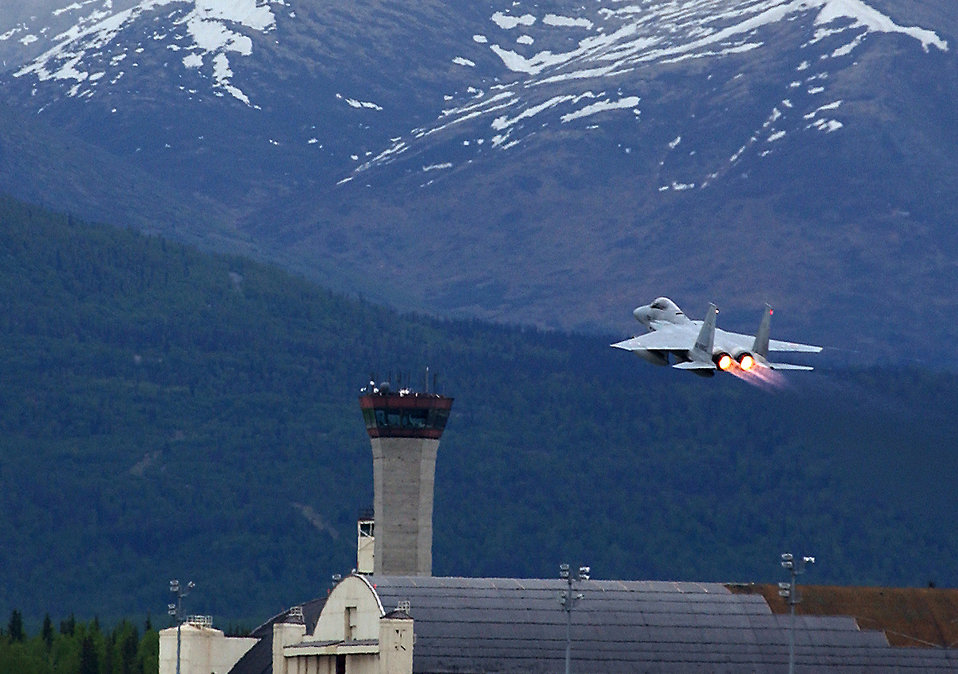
Afterburner on

ELMENDORF AIR FORCE BASE, Alaska -- A Japanese air self-defense force F-15J takes off for a familiarization training mission here May 30. The Japanese are in Alaska for Cooperative Cope Thunder, a Pacific Air Forces-sponsored air-combat training exercise set for June 5 to 20. Cope Thunder represents the first time the Japanese have deployed F-15 aircraft to North America for an exercise.